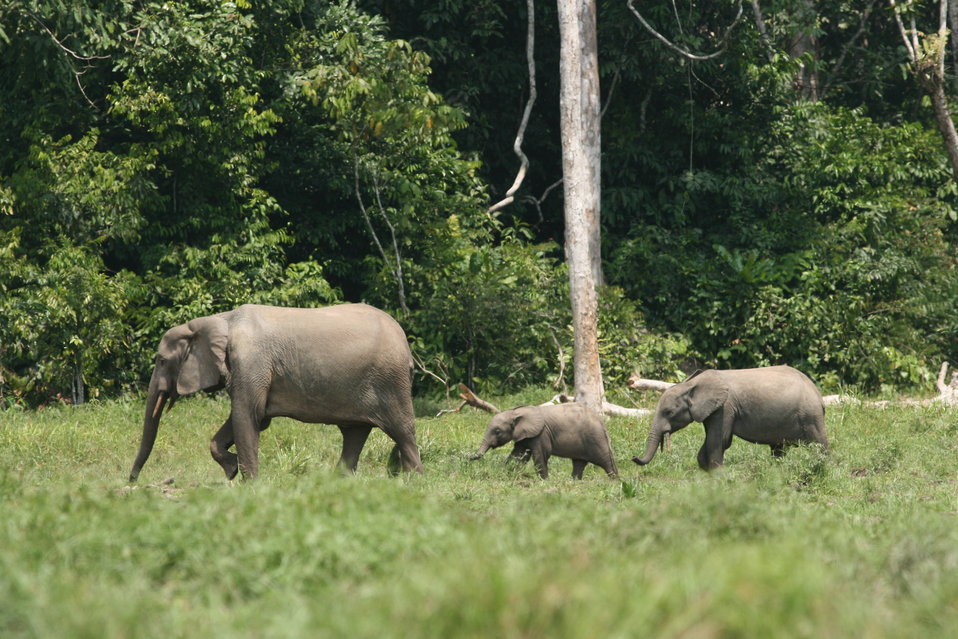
Forest elephant family group in a rainforest clearing.